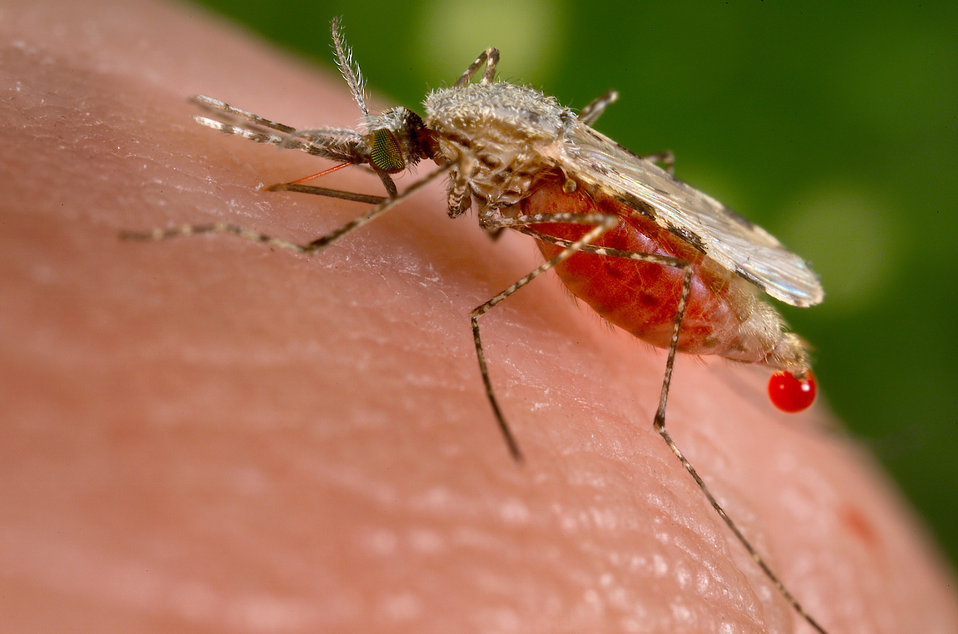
Here, an Anopheles stephensi mosquito is obtaining a blood meal from a human host through its pointed proboscis.